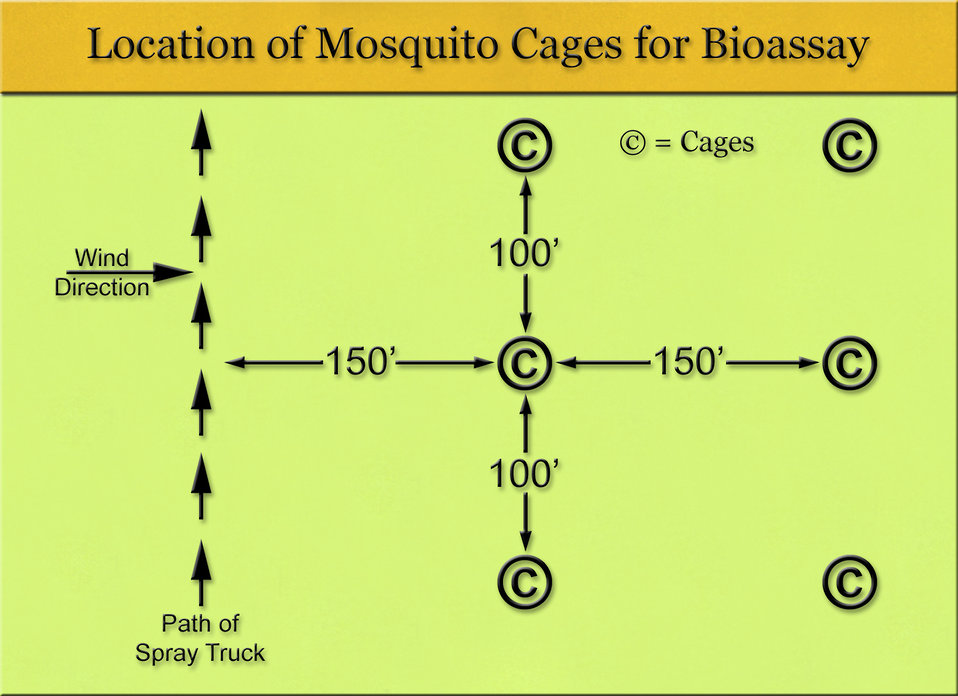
This diagram maps out the measured placement of open field bioassay cages when conducting analysis on the effectiveness of ultra low volume (ULV) insecticide dispersal by a ground situated application vehicle, i.e., truck.